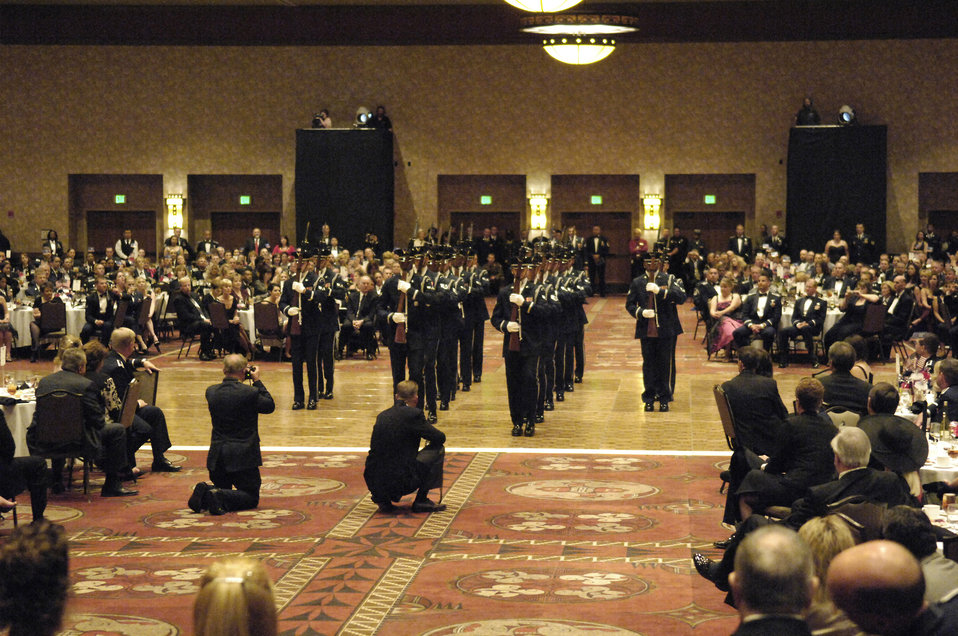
Drill team celebrates Air Force anniversary

The Air Force Honor Guard Drill Team performs Sept. 14 at the Sandia Resort in Albuquerque, N.M., during the New Mexico State Air Force 60th Anniversary Ball .